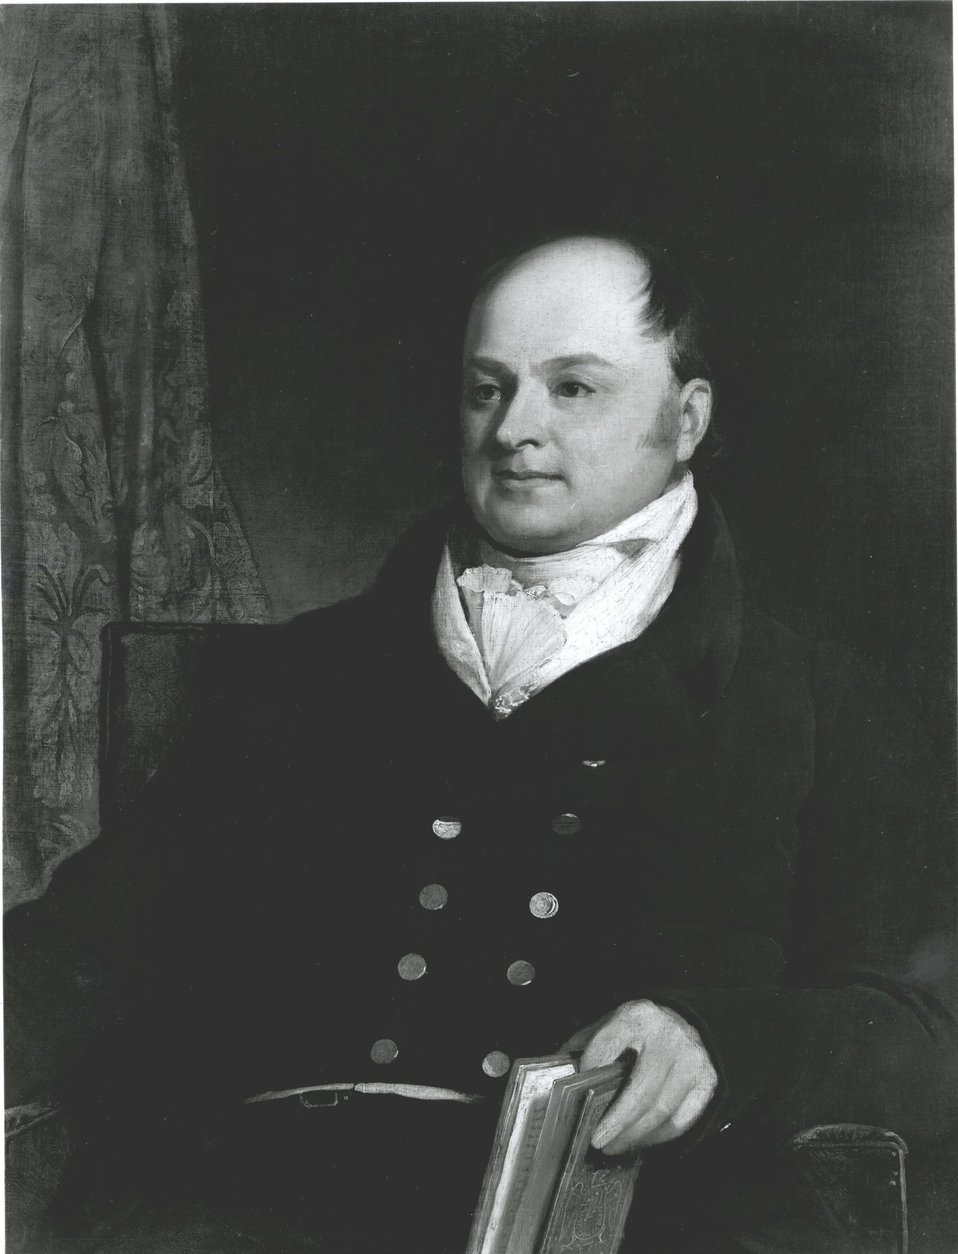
John Quincy Adams, U.S. Secretary of State, September 22, 1817 to March 3, 1825